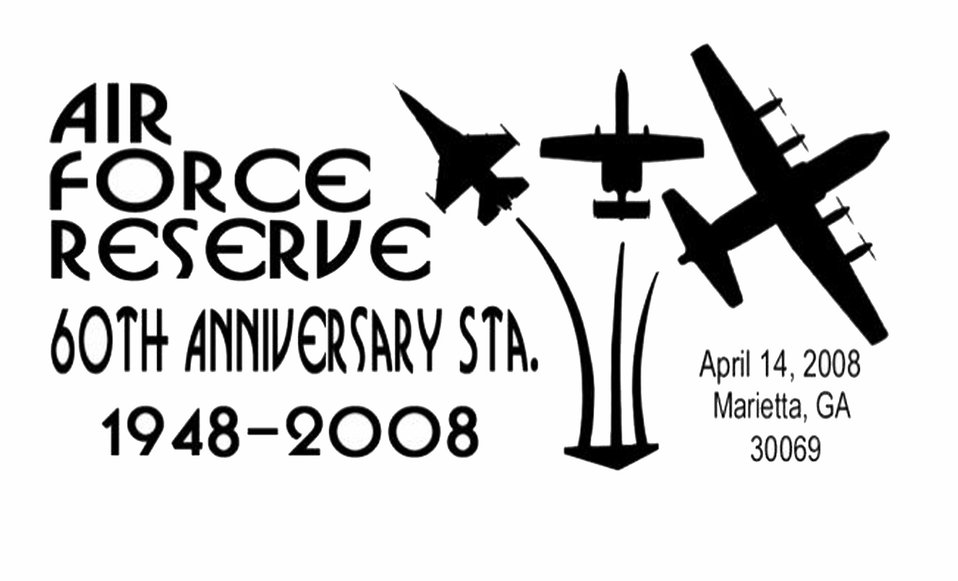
Postmark commemorates Air Force Reserve 60th anniversary

The cancellation stamp to be used by the U.S. Postal Service to commemorate the 60th anniversary of the Air Force Reserve. The stamp will be used from April 14 to June 14 at the Marietta, Ga., Post Office.